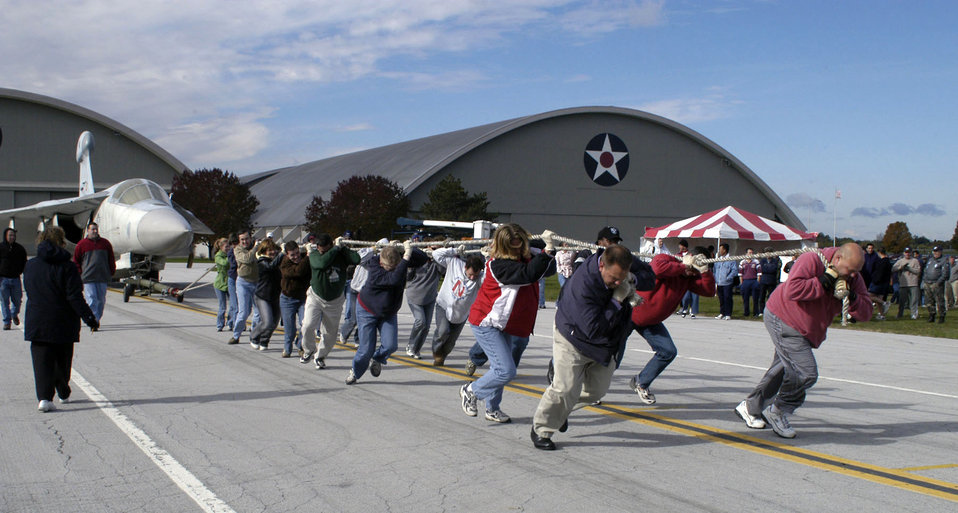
Teams pull for charity

A team begins to pull a 60,000 pound EF-111 Raven during the 2006 CFC Aircraft Pull Oct. 12 at the National Museum of the U.S. Air Force at Wright-Patterson Air Force Base, Ohio. Teams pull the aircraft as far as they can in 45 seconds. The team pulling the aircraft the greatest distance is the winner. Team entry fees are donated to the CFC.